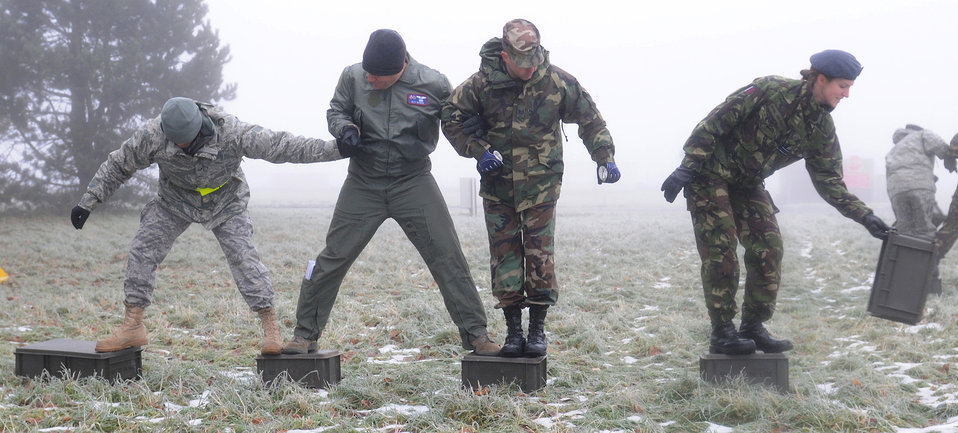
Cross-country training pools experience, skills

U.S. and Royal Air Force airmen from RAF Mildenhall, England, and RAF Marham, England, participate in a team building exercise during Leader, Ethos and Air Power Training Day Dec. 6, 2010, at RAF Marham. LEAP was conducted in a safe training environment, allowing participants to show individual character, spirit and attitude while facing physical and mental challenges.